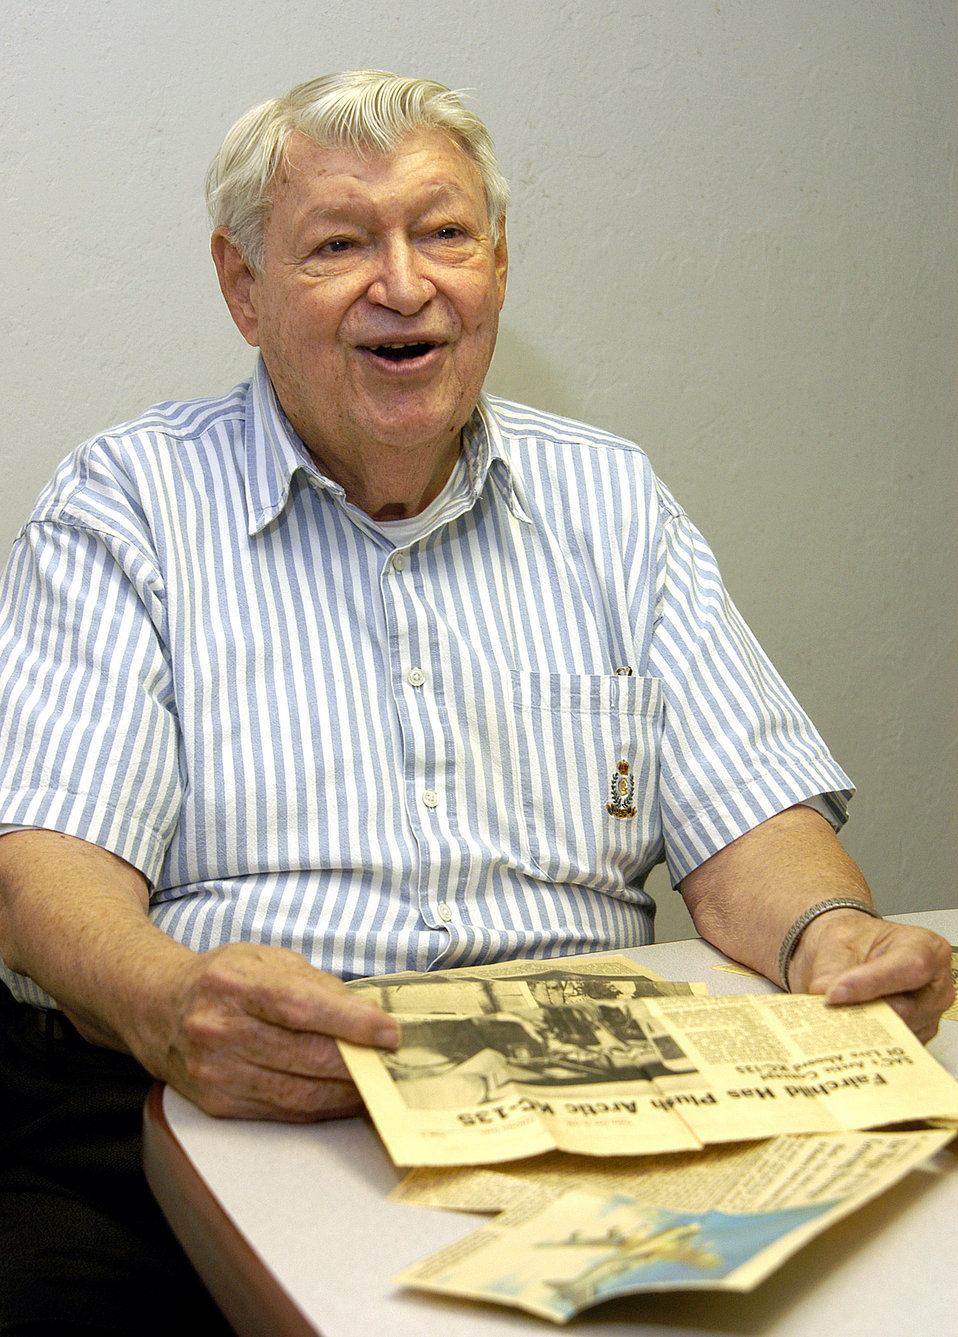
Former KC-135 pilot reminisces about plane's glory days

Retired Air Force Lt. Col. Bill Fisher remembers experiences he had as one of the first pilots to fly the KC-135 Stratotanker.